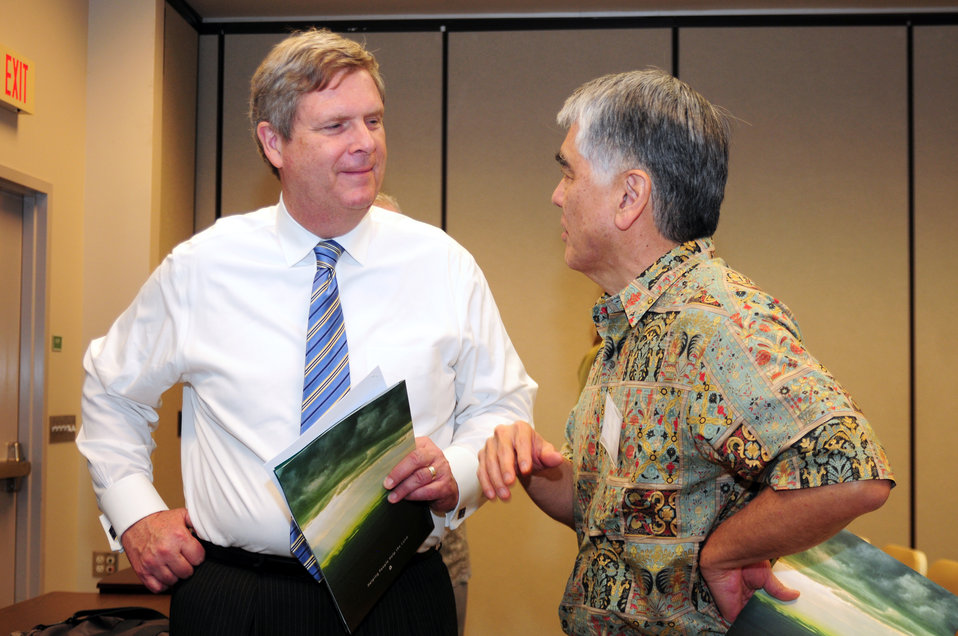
Agriculture Secretary Tom Vilsack speaks with Andy Hashimoto of the University of Hawaii at the conclusion of a stakeholder meeting held at the State of Hawaii, Department of Agriculture Plant Quarantine Building in Honolulu, Hawaii, on Tuesday, January 10, 2012.